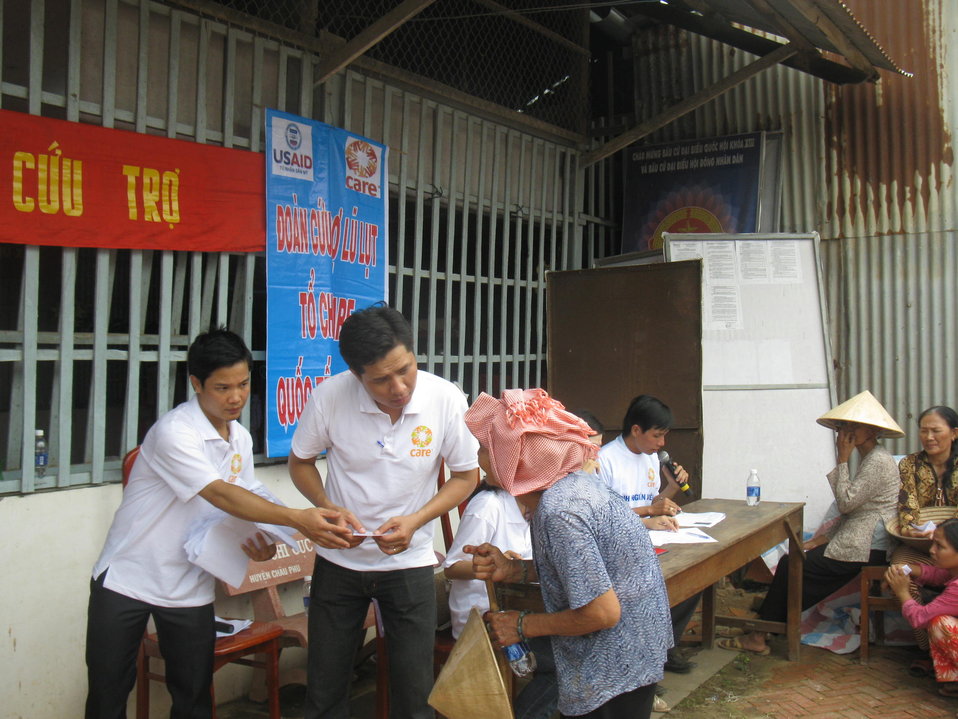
USAID Relief distribution in Giang An Province

November 8, 2011